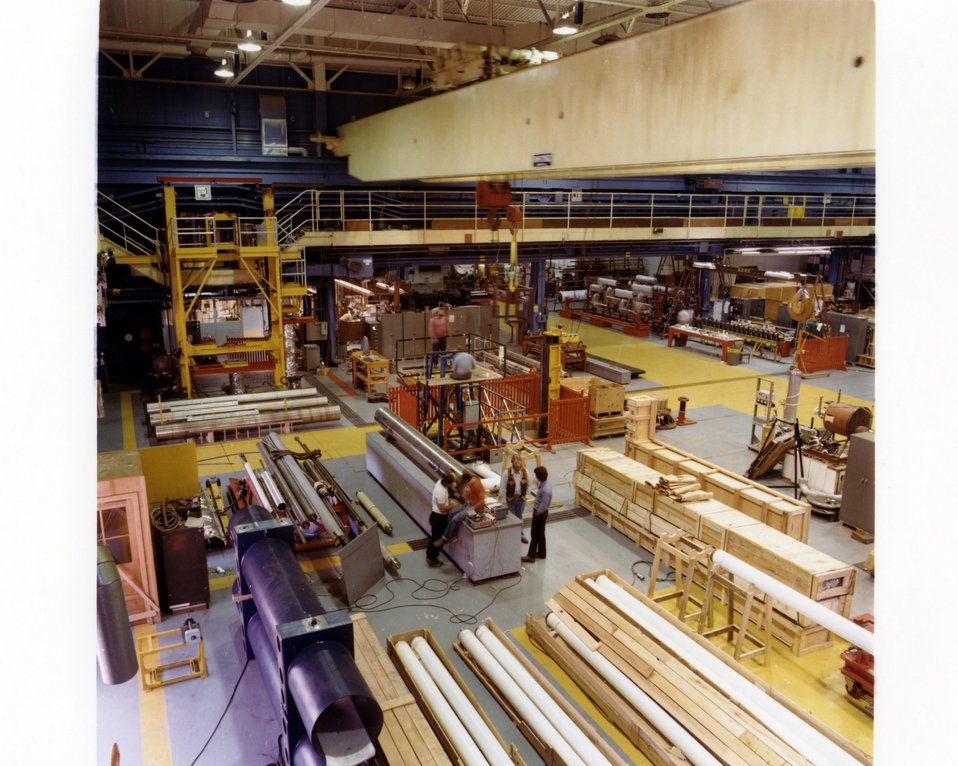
CBA IS A PROTON-PROTON COLLIDING BEAM ACCELERATOR WHICH IS BEING BUILT TO STUDY THE BASIC STRUCTURE OF ENERGY AND MATTER. THE FACILITY ITSELF IS AN UNDERGROUND CIRCULAR TUNNEL, WHICH IS 3.8 KILOMETERS IN CIRCUMFERENCE. TWO RINGS OF SUPERCONDUCTING MAGNETS WILL BE INSIDE THE TUNNEL. PRO- TON BEAMS WILL BE INJECTED INTO THE TUNNEL AND ACCELERATED TO ENERGIES UP TO 400 GEV. AT SIX PLACES ALONG THE TUNNEL, THE BEAMS WILL COLLIDE. EXPERIMENTAL HALLS, WHICH ENCLOSE THESE 6 INTERSECTIONS, WILL HOUSE EQUIPMENT FOR STUDYING THE RESULTS OF THE COLLISIONS.